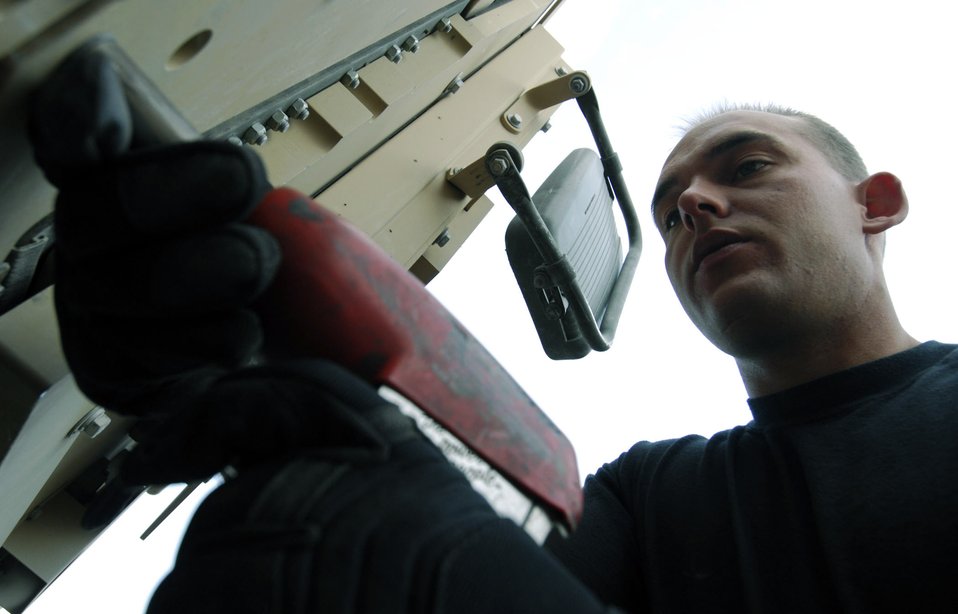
Frag Team Five

Staff Sgt. Benjamin Johnson secures plates of armor to a Humvee Nov. 27. He is a member of Frag Team 5, which is responsible for installing up-armor kits, fire suppression systems, improved seat belts and gunner restraints in Air Force combat vehicles.